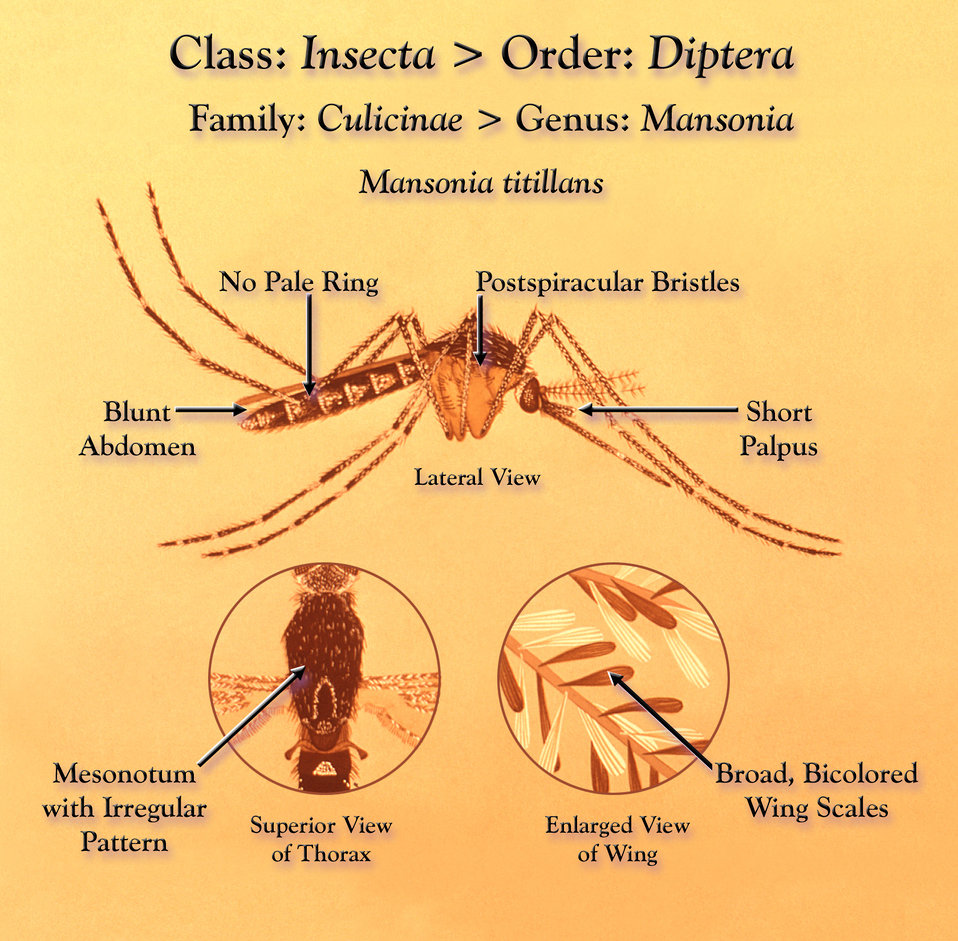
This illustration depicts a Mansonia titillans mosquito from a lateral view, as well as two insets; a superior view of its thoracic region (Lt), and an enlarged view of a wing section revealing the morphologic details of the broad, bicolored wing scales (Rt).